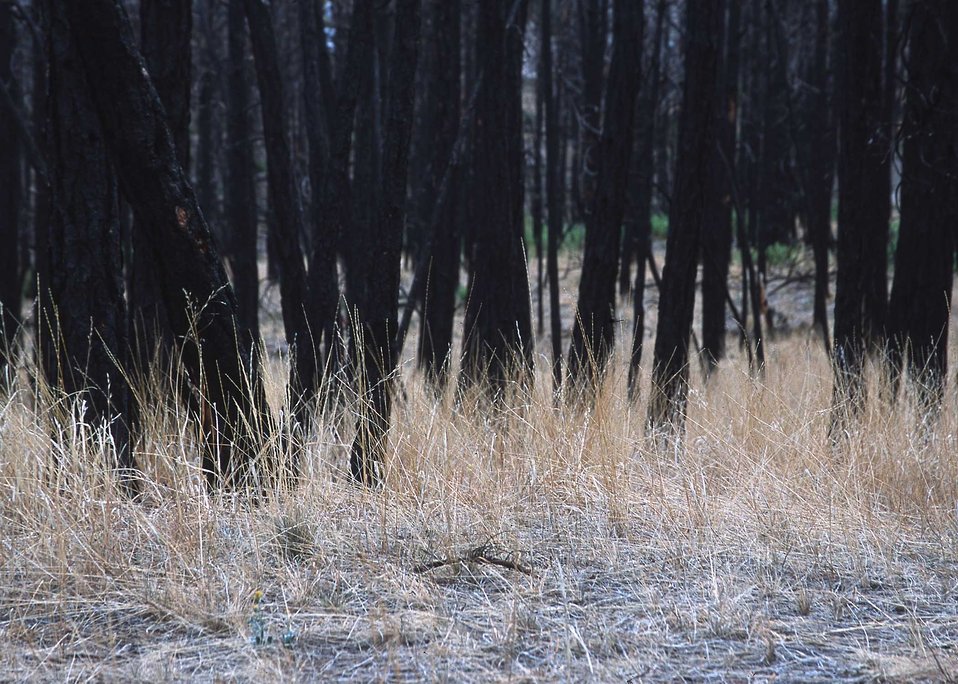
First years growth of emergency reseeding after the Los Alamos fires. Some of the species planted for erosion control and habitat improvement were prairie junegrass, slender wheatgrass, mountain brome, three awn, gambel's oak, and mountain mahogany.